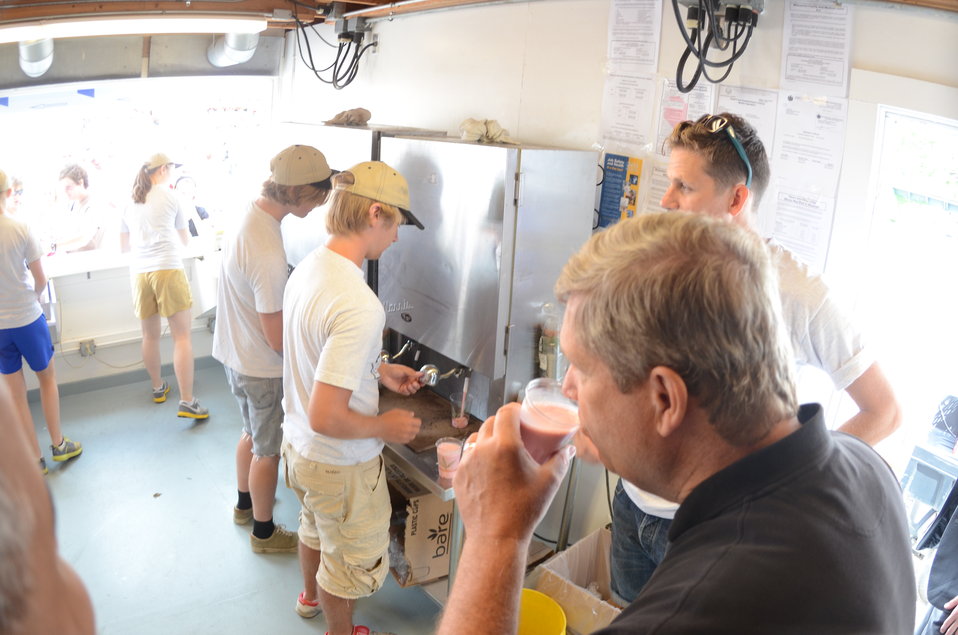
Agriculture Secretary Tom Vilsack at the Wisconsin State Fair in West Allis, WI, on Thursday, August 4, 2011, USDA Photo by Lance Cheung.